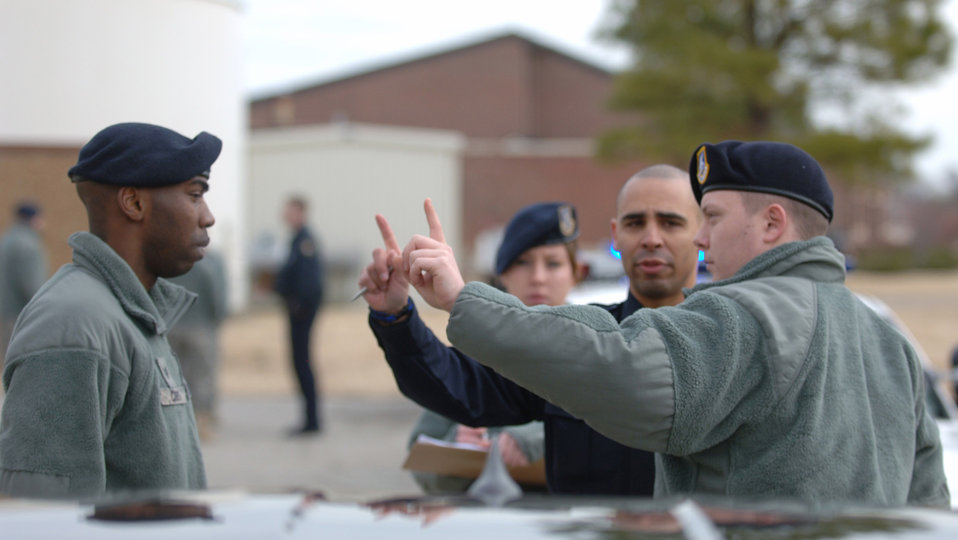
Sobriety Testing

James City County Master Police Officer Marc Marchand (in black) advises Senior Airman Brandon Kohler, a 633d Security Forces Squadron patrolman, how to properly administer a field sobriety test to Staff Sgt. Chris Cobbs, a 633rd SFS desk sergeant, during a training exercise Jan. 20, 2011, at Langley Air Force Base, Va. The JCC Police Department provided expert officers to train security forces personnel how to perform the test and apprehend impaired drivers, which are requirements for all law enforcement officers operating in Virginia.